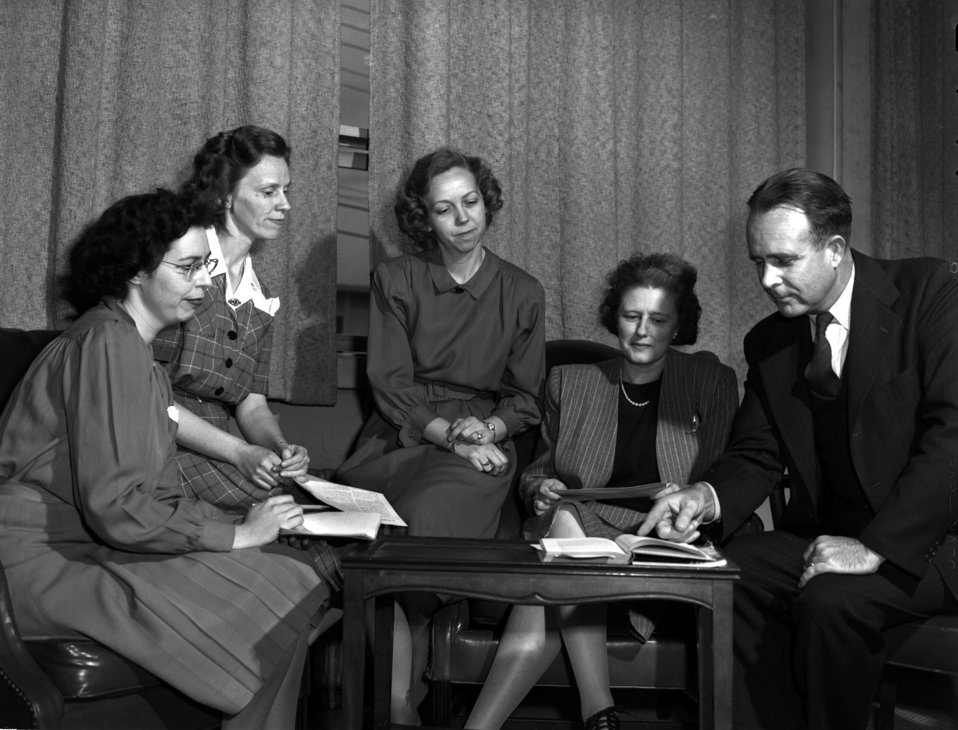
Oak Ridge Education Association

3265-3 DOE photo Ed Westcott 1-23-1947 Oak Ridge Tennessee